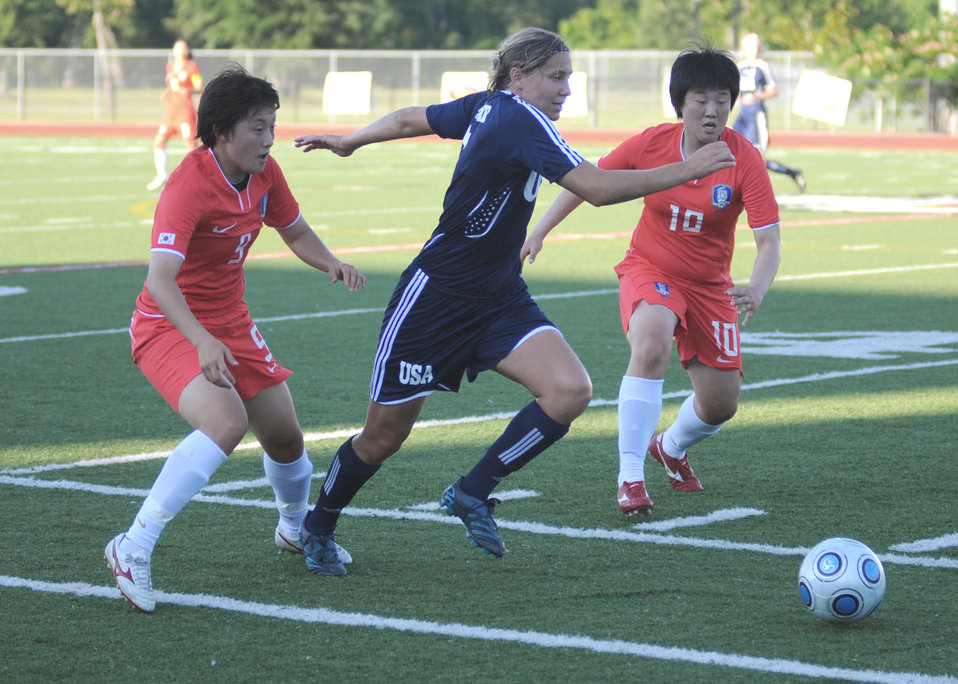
Keesler officials host Women's Soccer Championship

Soccer players from the United States and South Korea compete during the 5th Counseil Du International Sports Militaire Women's Soccer Championship at Biloxi High School Stadium June 7 in Mississippi. The CISM tournament, hosted by officials from Keesler Air Force Base, Miss., includes teams from Brazil, Canada, France, Germany, The Netherlands, South Korea and the United States. Matches are scheduled June 6 through 13, with the Gold Match June 13 at 2 p.m.